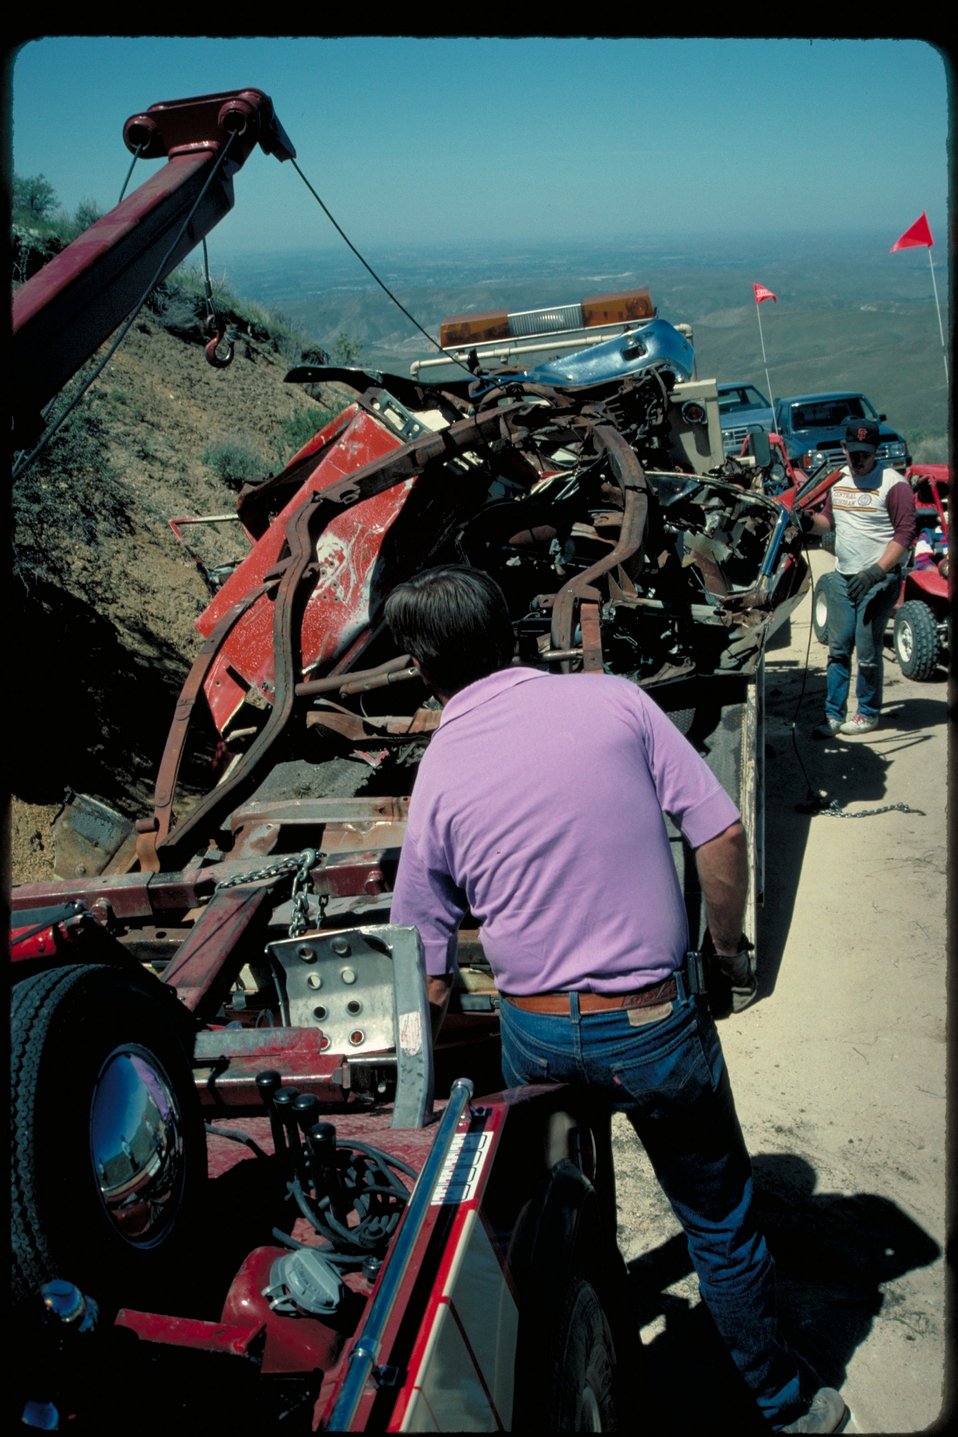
Boise Front volunteer project Four Rivers Field Office LSRD Lower Snake River District